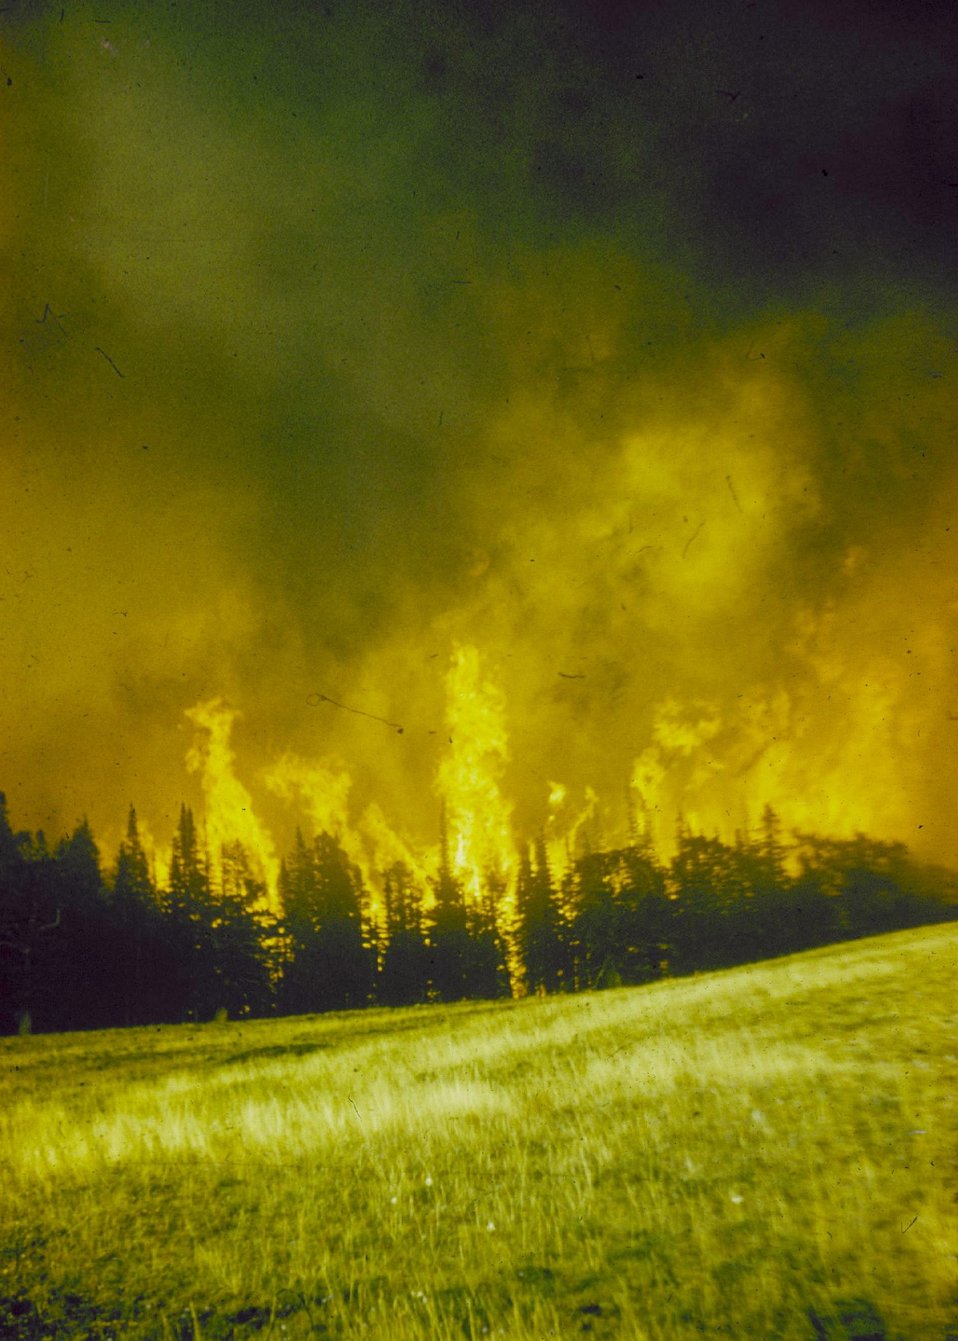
A wildfire in Yellowstone National Park in Wyoming in 1988.